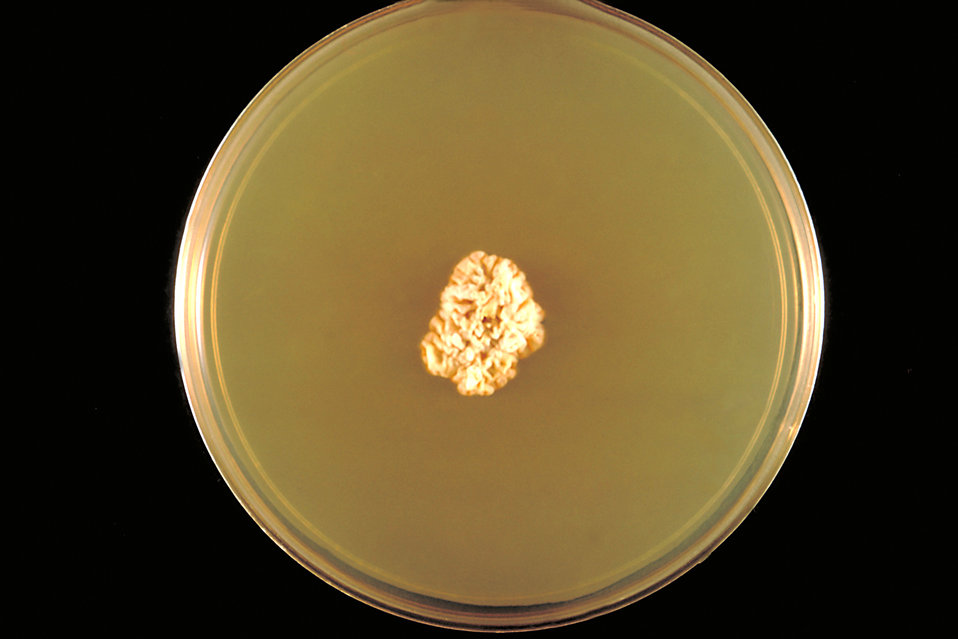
This is a DTM plate culture growing the dermatophytic fungus Trichophyton concentricum.